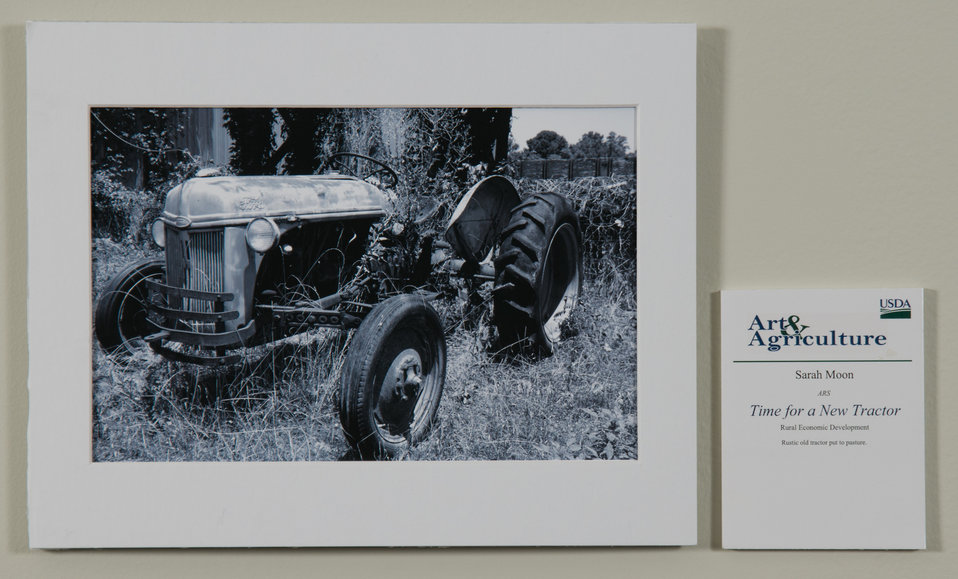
Online Viewer's Choice entries of the 2013 Art & Agriculture, Tuesday, July 9, 2013, in the South Building, Washington, D.C. Themes were expressed by employees from across the department and the contest was open to full-time and part-time USDA employees. Winning artwork will be displayed till the end of the year. U.S. Artistic expression is a creative outlet that is vital for an individual to grow and develop.